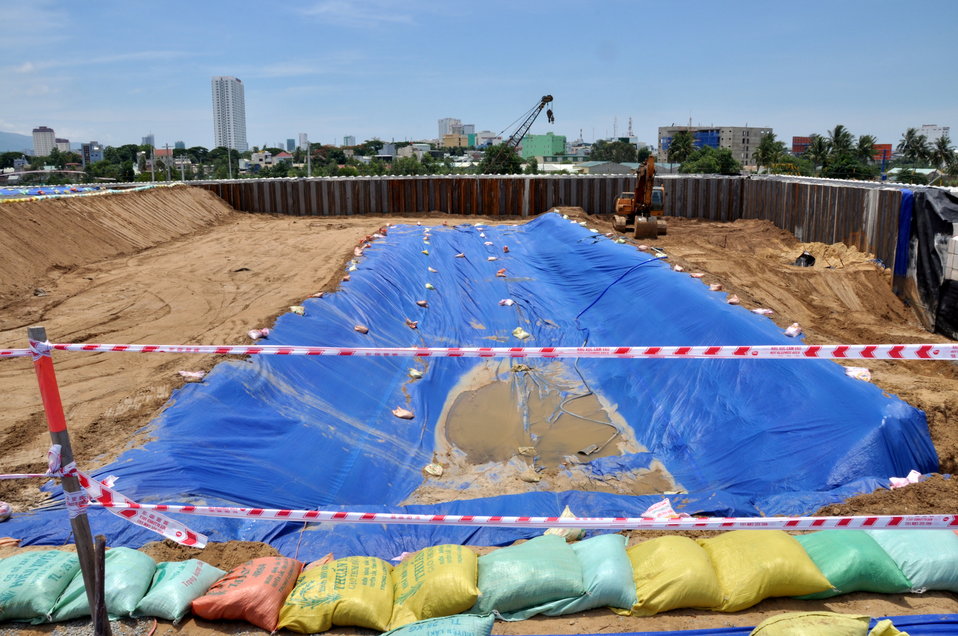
USAID Dioxin Contamination Project Progress: Containment Structure

Progress at the Environmental Remediation of Dioxin Contamination Project at Danang Airport

July 16, 2013